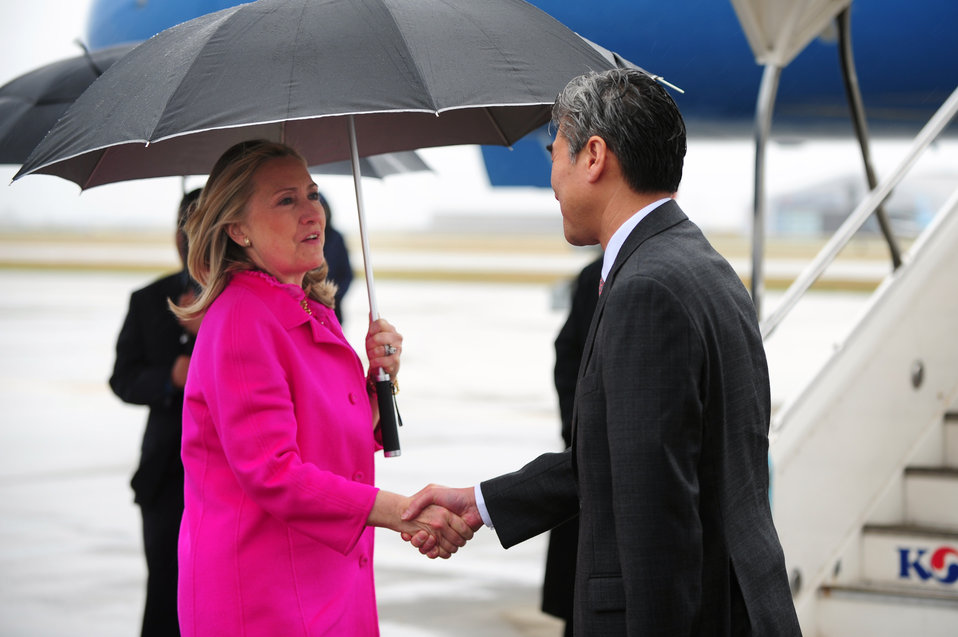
Secretary Clinton Says Goodbye to South Korean Foreign Minister Kim

U.S. Secretary of State Hillary Rodham Clinton says goodbye to Korean Foreign Minister Kim Sung-hwan in Busan, South Korea, on November 30, 2011.